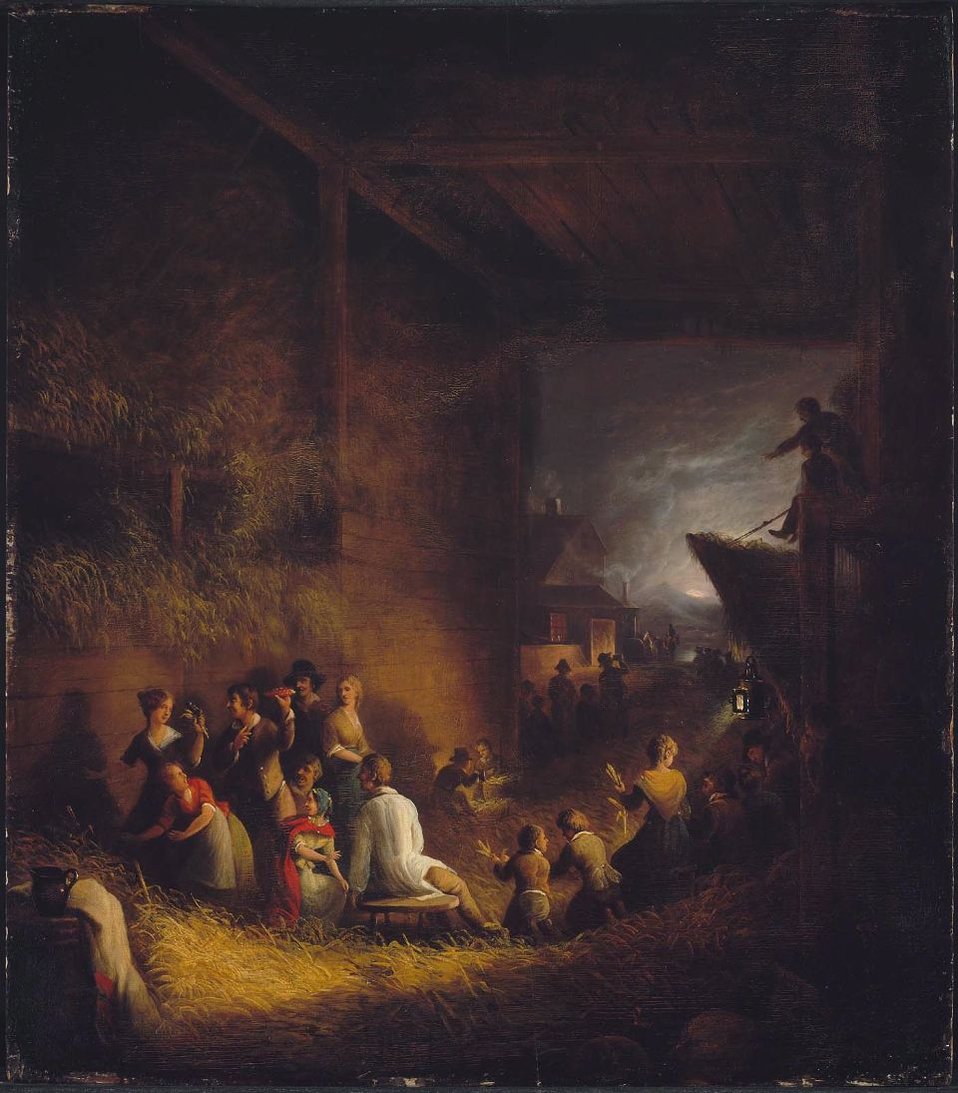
Alvan Fisher - Corn Husking Frolic